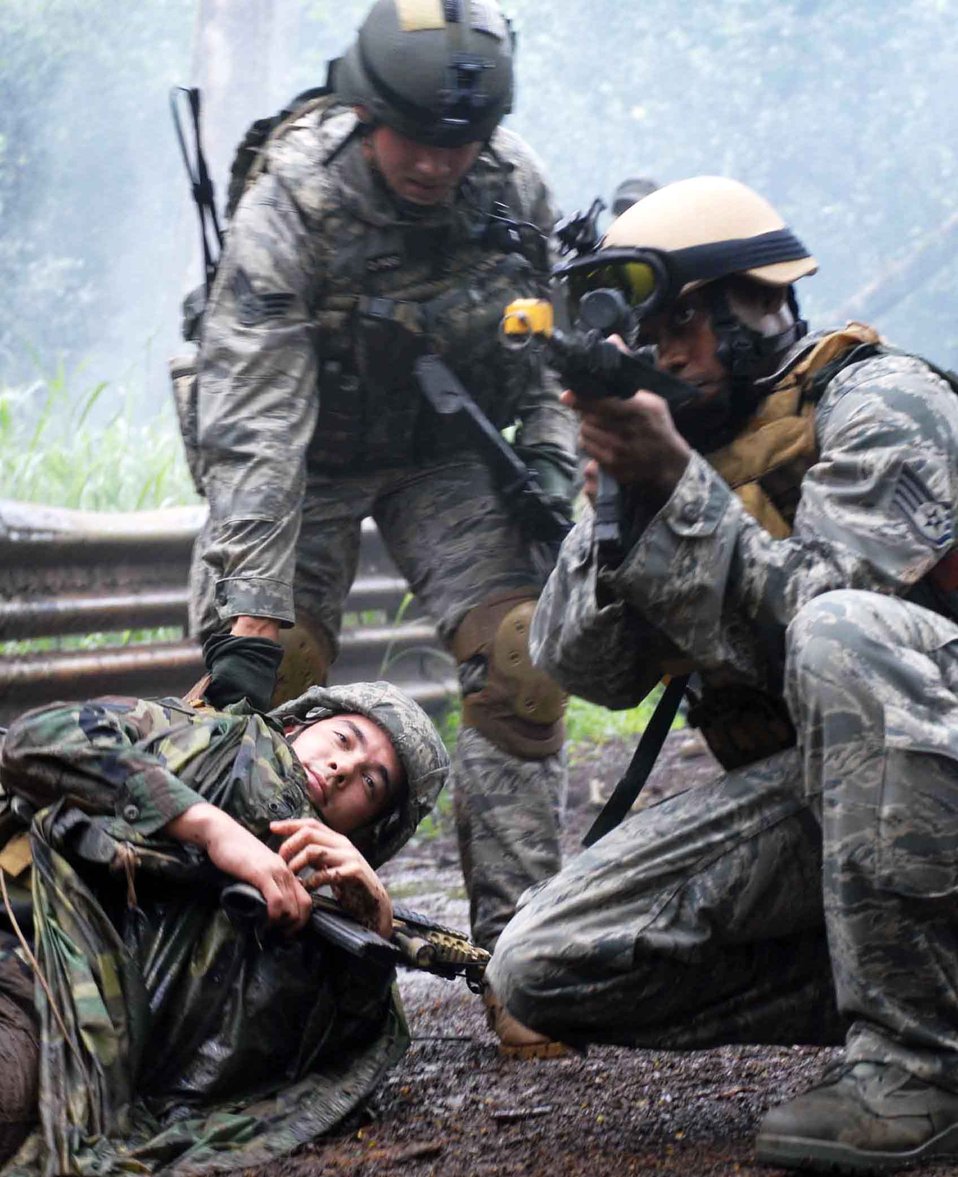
Airmen train with Army to become JTACs

Staff Sgt. Anthony Stewart, 25th Air Support Operations Squadron electrical engineer, provides small-arms fire cover for Senior Airman Robert Gains, a tactical air control party member, while he drags Senior Airman Christopher Lee, a